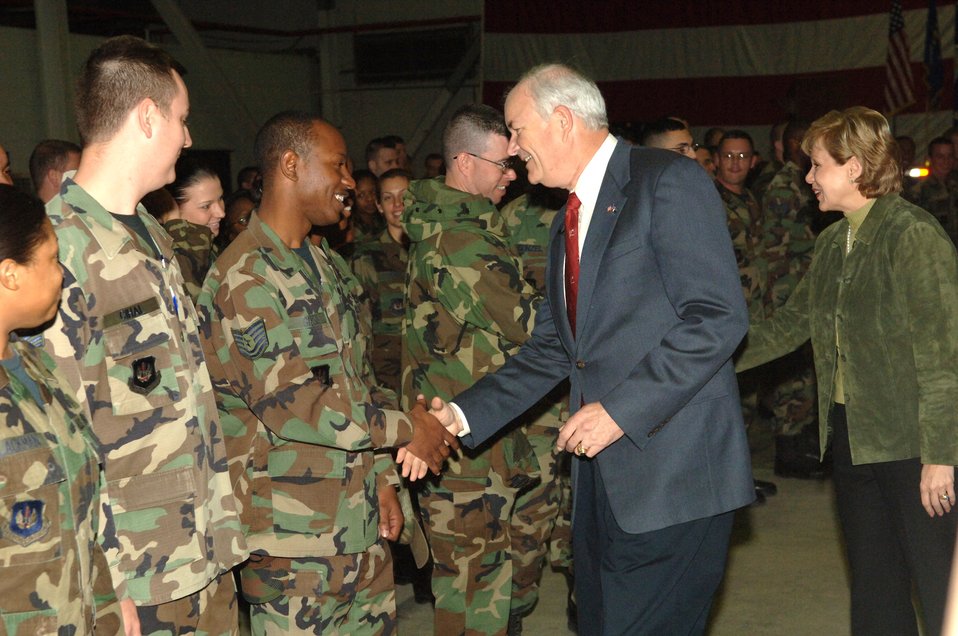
Incirlik welcomes Air Force secretary

Secretary of the Air Force Michael Wynne meets base Airmen after his speech in Hangar 4 Dec. 6 at Incirlik Air Base, Turkey. The secretary is on a European tour visiting Airmen supporting the war on terrorism as the Air Force continues to become more capable, more efficient and more lethal.